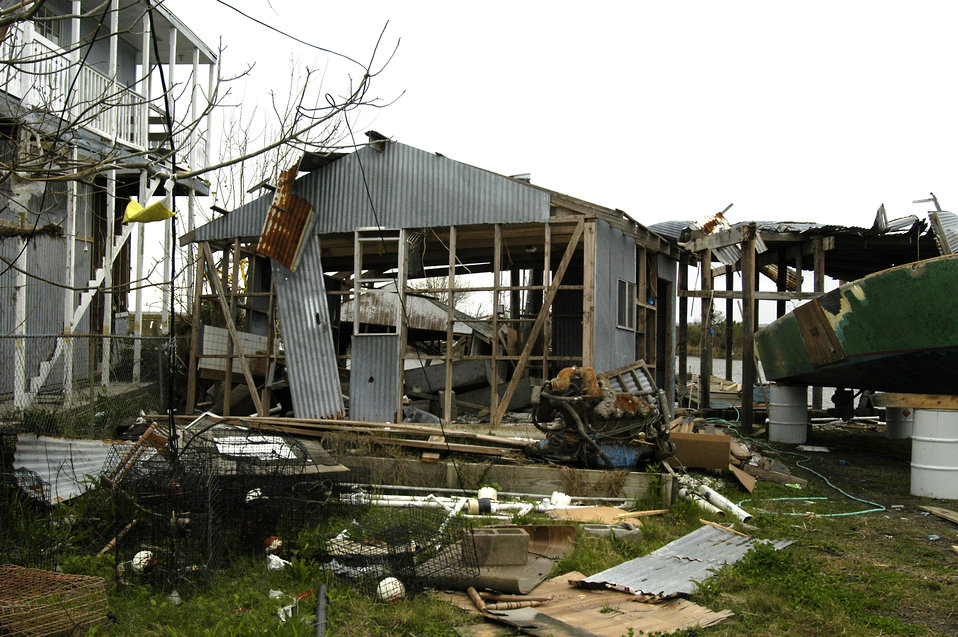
Homes built along the many canals in New Orleans, LA, were washed away by Hurricane Katrina’s 20-foot storm surge that overwhelmed the city’s levees. All that remained of this home was the cement steps leading to the front door. Hurricane Katrina was the 6th strongest hurricane in U.S. history and the 5th deadliest. Katrina made landfall on Monday morning, August 29, 2005 as a Category 3 hurricane with sustained winds of 125 mph with over a 20-foot storm surge. Katrina caused catastrophic damage over 90 thousand square miles across Louisiana with an estimated $75 billion dollars in damage. The total economic impact to the Gulf Coast was estimated at over $150 billion. 80% of New Orleans, LA, was underwater with some areas more than 20 feet deep. Less than a month later southern Louisiana was struck by a second Category 3 hurricane Rita inflicting more damage in the southwestern areas of Louisiana adding an addition $12 billion worth of damage to the already beleaguered state. The U.S. Army Corps of Engineers (USACE) under the auspices of FEMA was the lead service in providing assistance to the citizens of Louisiana. The U.S. Department of Agriculture (USDA) supplied emergency food aid, emergency loan assistance to farmers and home owners, and USDA personnel from around the nation volunteered their time and muscle to aid in the recovery operations.